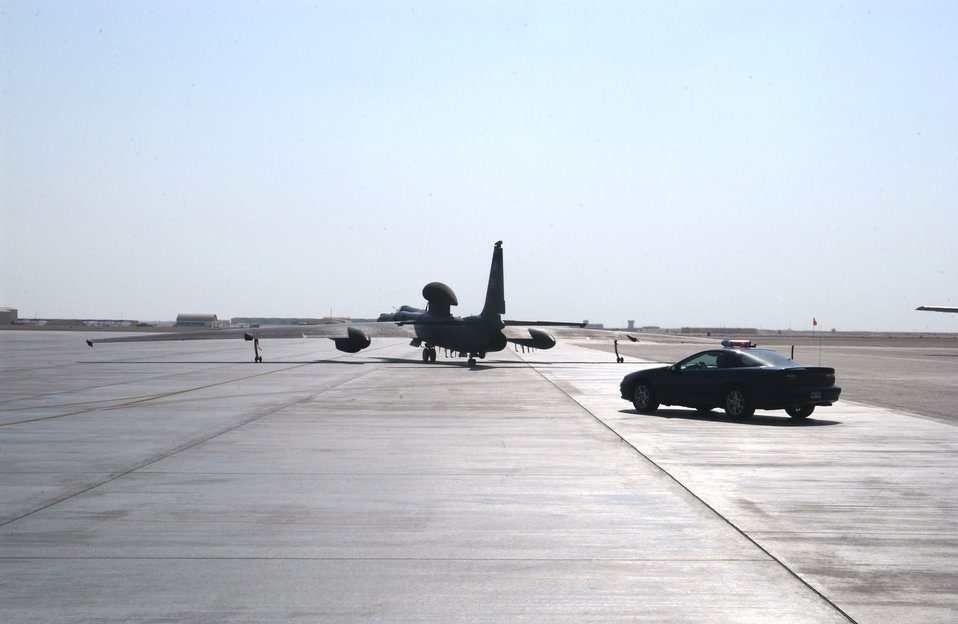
Flying high

Capt. Karl Frederick taxies his U-2 Dragonlady toward the runway followed by the aircraft chase car Oct. 24. Captain Frederick is part of the vital intelligence, surveillance and reconnaissance team flying missions in Southwest Asia for Operations Enduring Freedom and Iraqi Freedom. A U-2 pilot will be aloft from eight to 12 hours on a typical mission.